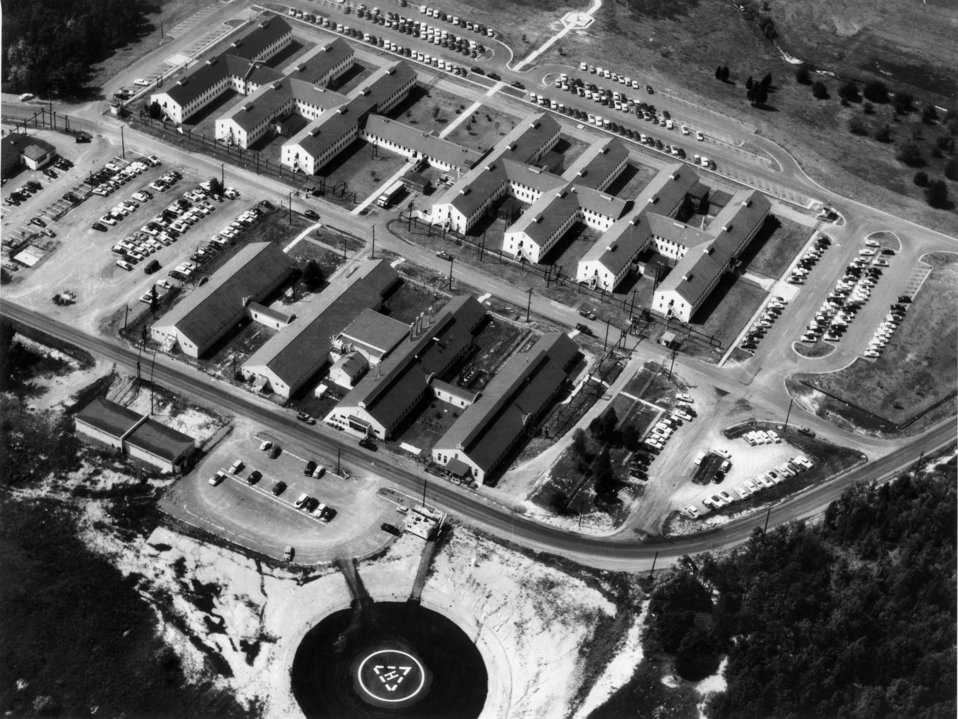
AEC Adm. Bldg. Oak Ridge

55-774 DOE photo by Ed Westcott 9-9-55 Oak Ridge Tennessee .